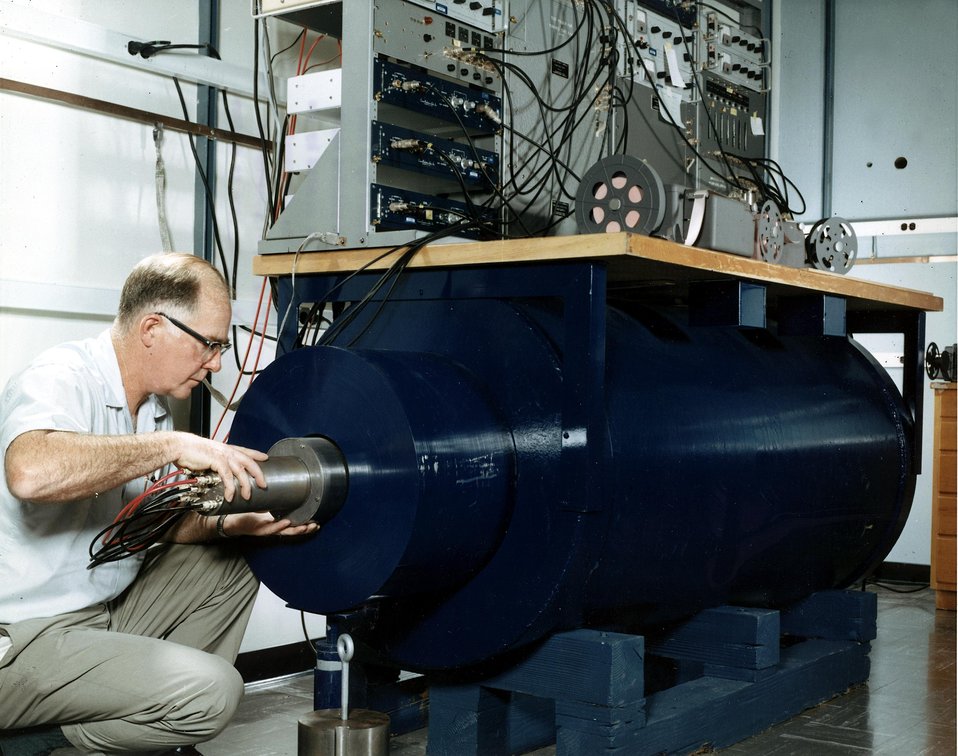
The low level counter used in the solar neutrino experiment is being
placed in the shield. In this experiment neutrinos which result from
nuclear reactions in the sun's core are detected by measuring the
radioactive argon nuclides that they produce in a target.